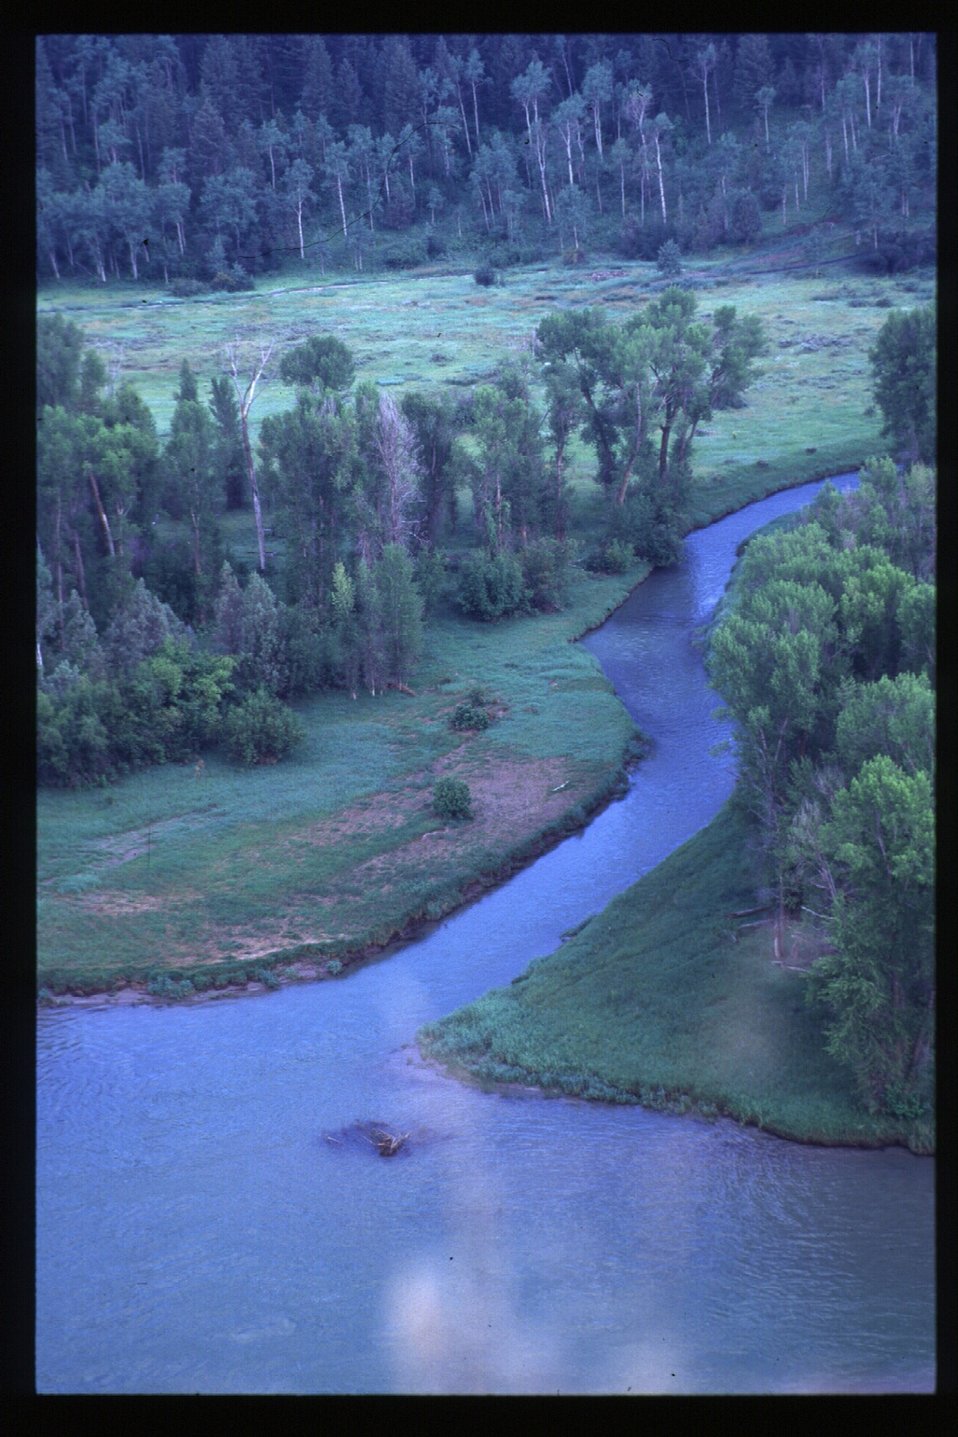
South Fork of Snake River vista Recreation Scenic Biker Shoshone Field Office USRD Upper Snake River District